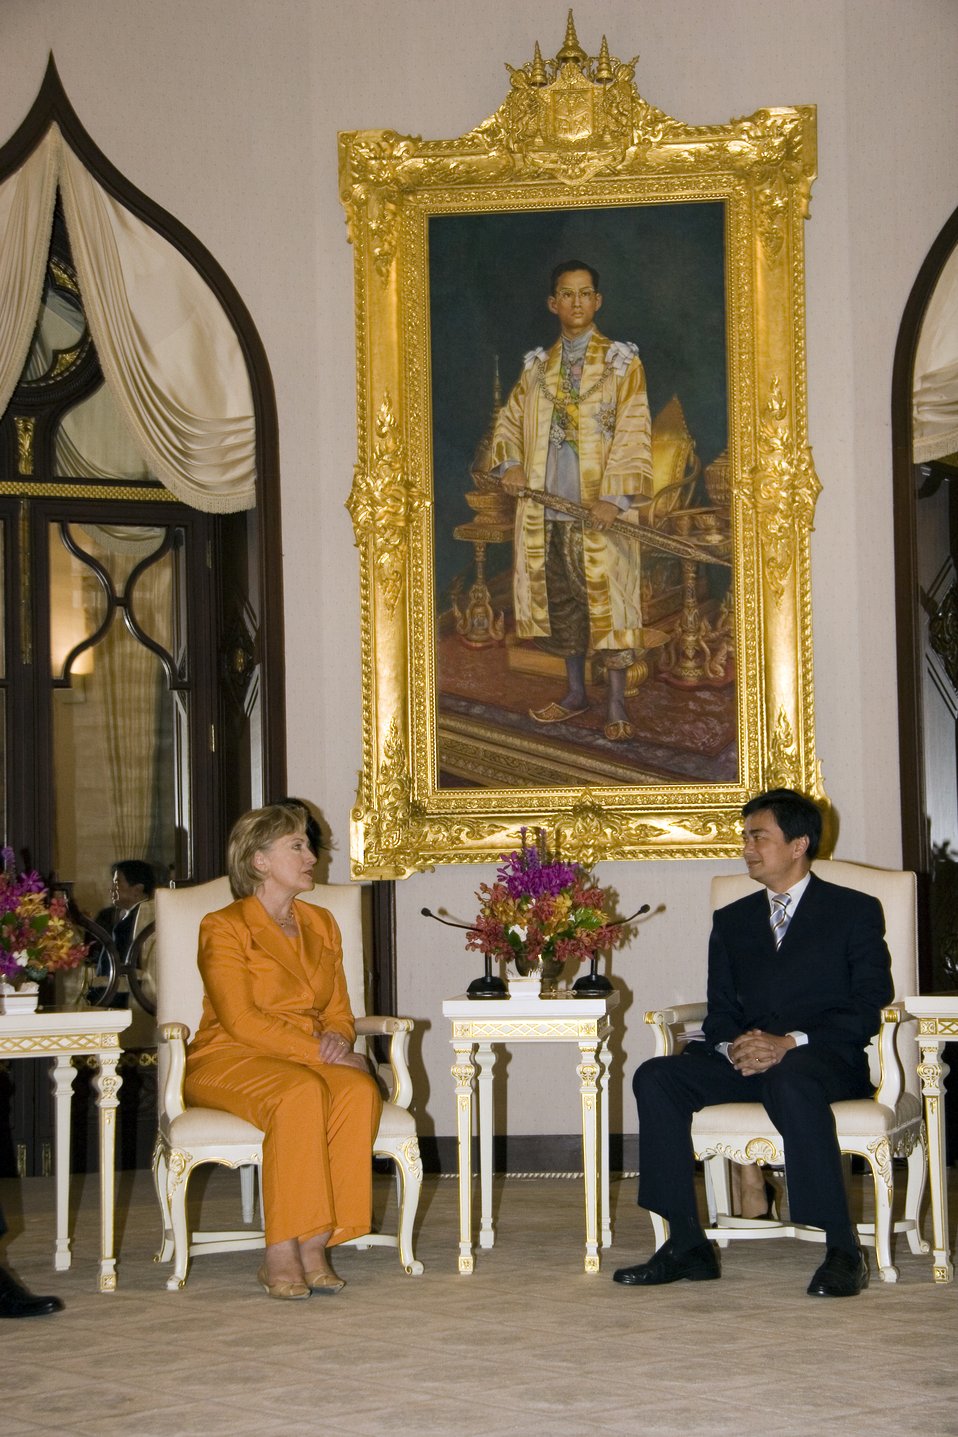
U.S.-Thailand Bilateral Meeting

U.S. Secretary of State Hillary Rodham Clinton and Thai Prime Minister Abhisit Vejjajiva seated prior to the bilateral meeting at Government House in Bangkok, Thailand July 21, 2009.